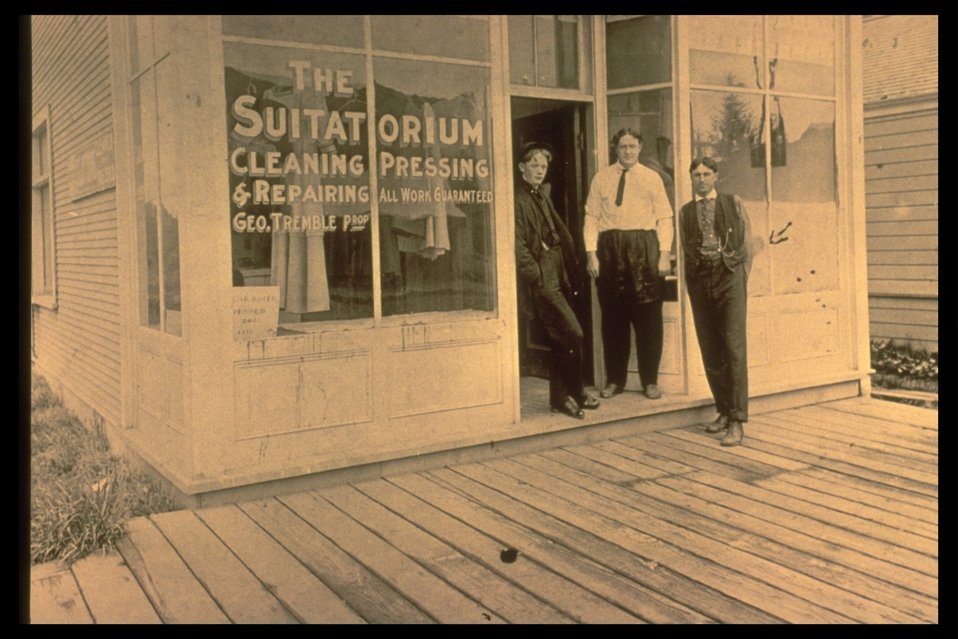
Black and white photo of men posing in front of the "Suitatorium" store.